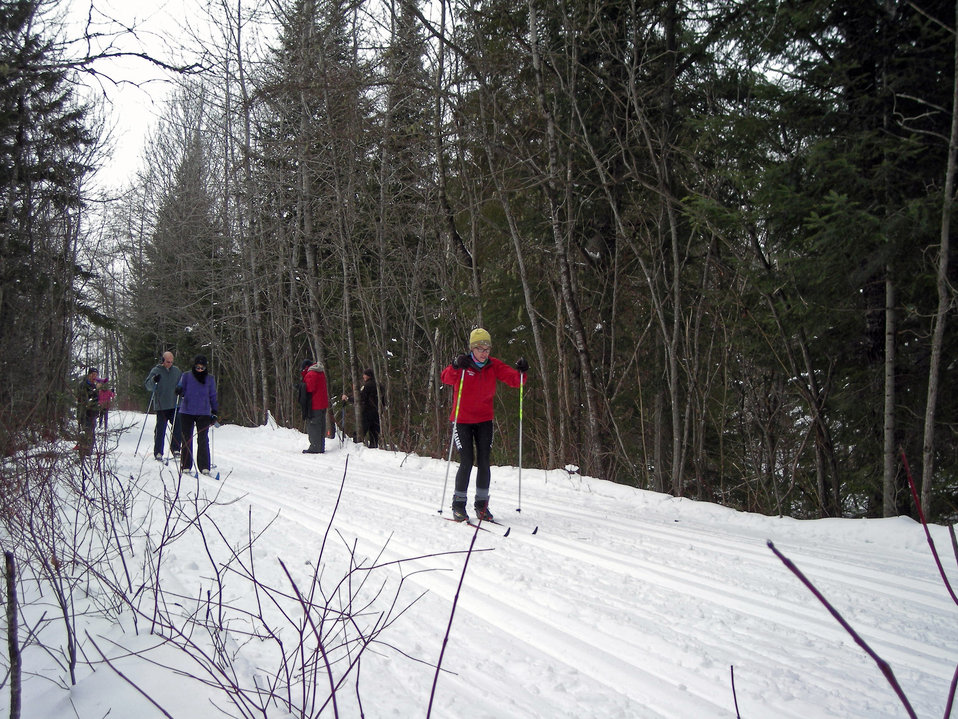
Cross-country skiing

Aroostook National Wildlife Refuge, ME.